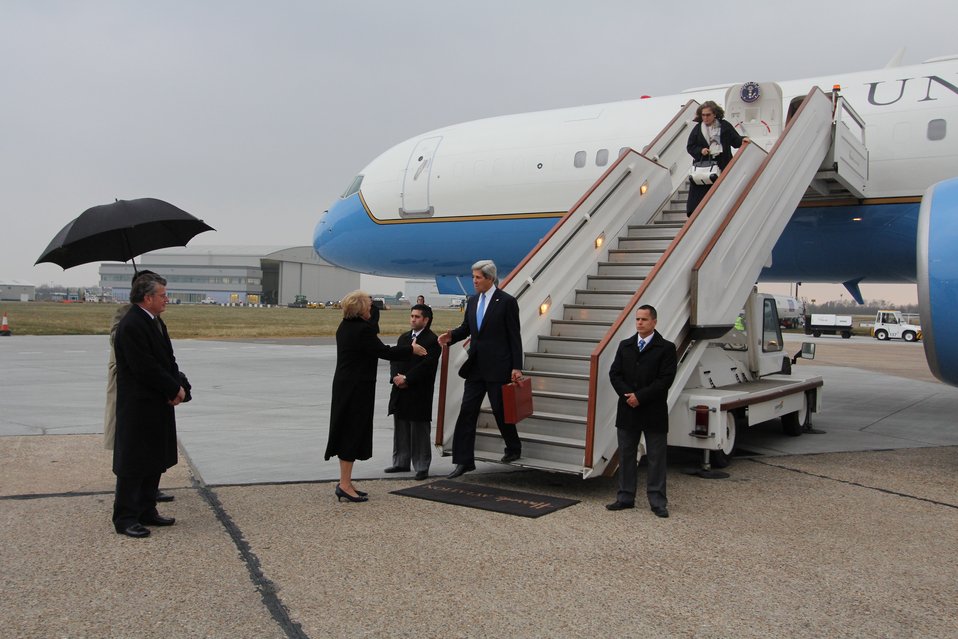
Secretary Kerry is Greeted Upon Arrival in London

U.S. Secretary of State John Kerry is greeted by Charge d'Affairs Barbara Stephenson and the United Kingdom's Ambassador Nicolas Jarrold in London, United Kingdom, on April 9, 2013.